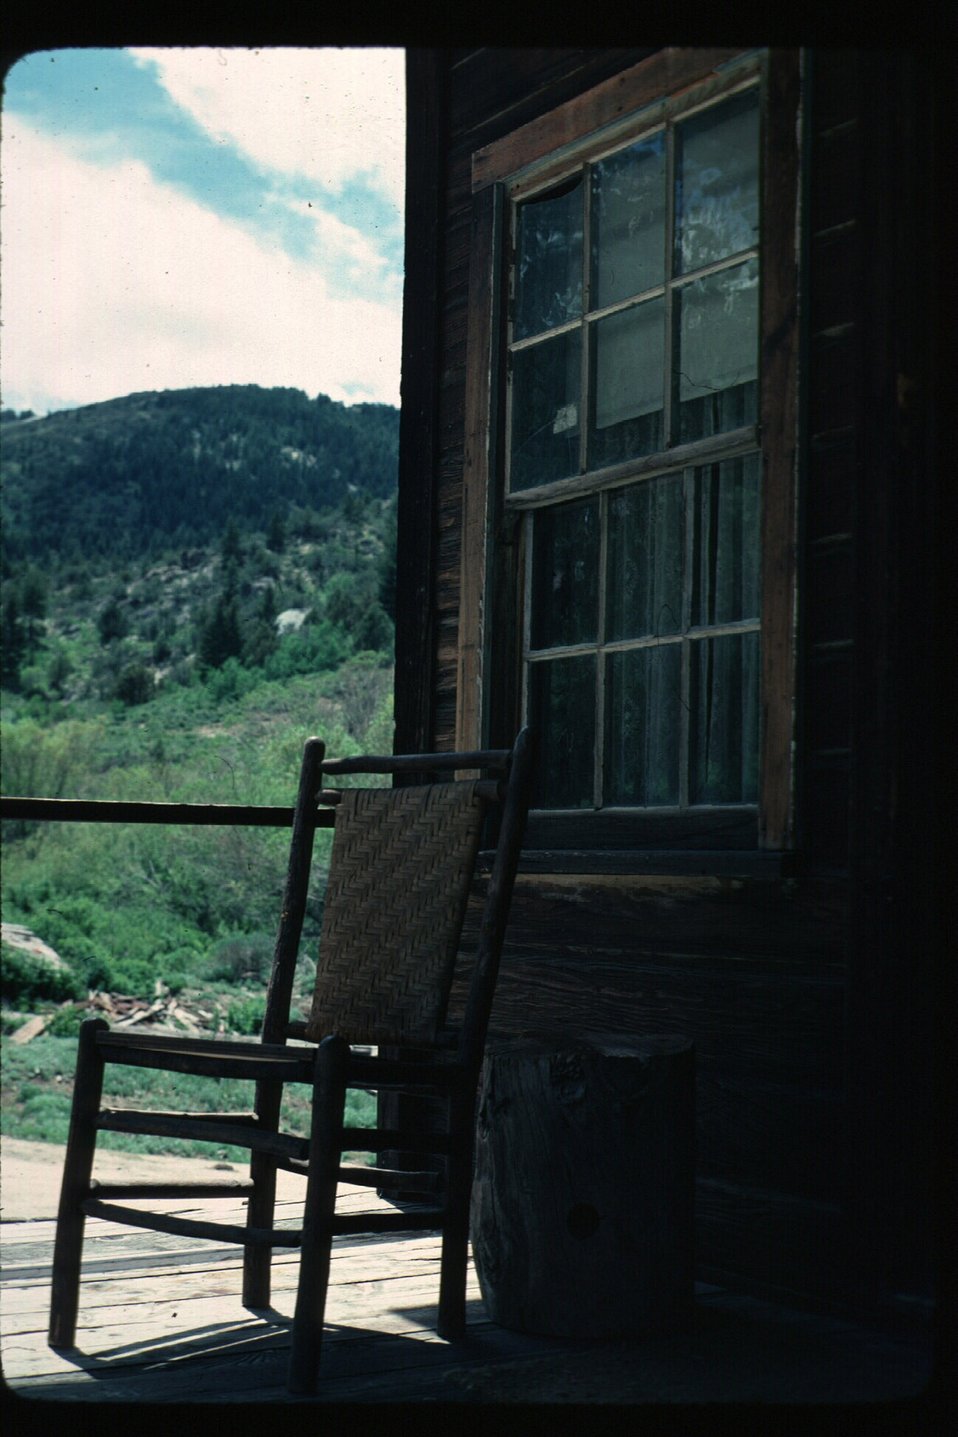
Architecture Silver City Cultural Resources Owyhee Field Office LSRD Lower Snake River District